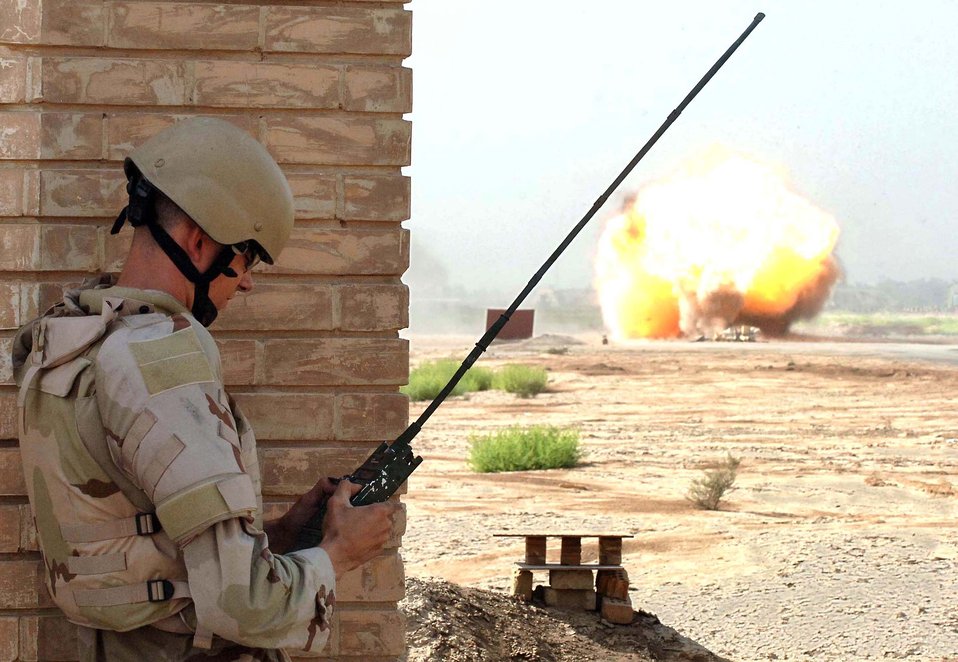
Baghdad boom

Staff Sgt. Andrew Smith commands a detonation of explosives on a range adjacent to Baghdad International Airport, Iraq, on Aug. 18. The Air Force explosive ordnance disposal unit at the airport is responsible for a 500-square mile area around Baghdad as part of a joint task force.